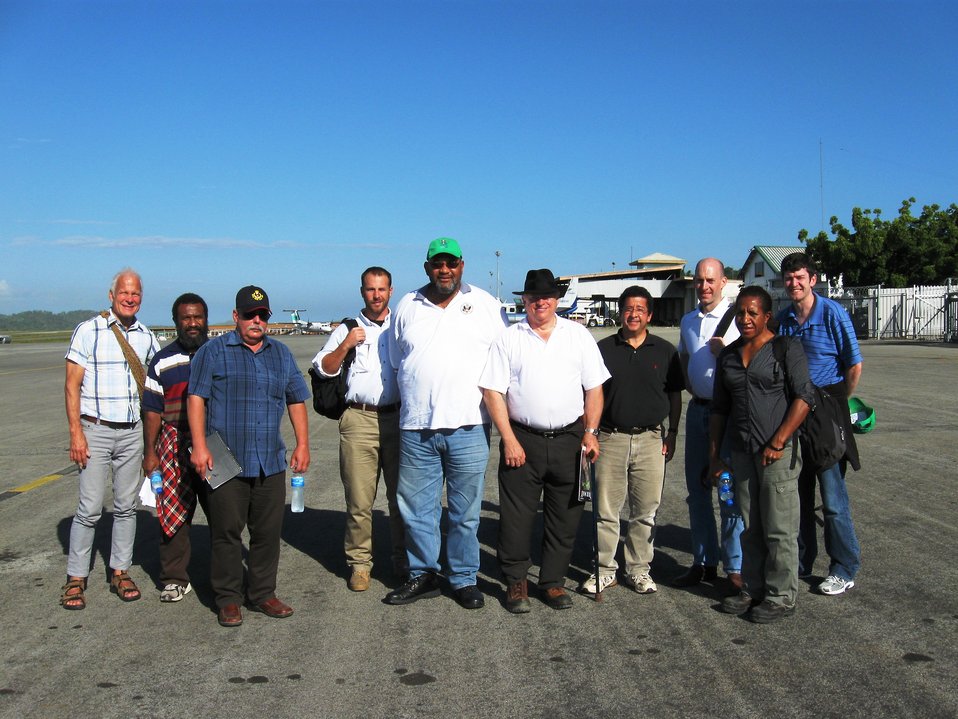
Coordinator for International Energy Affairs Goldwyn, Ambassador Taylor, and Team Members Return to Port Moresby

U.S. Secretary of State Hillary Rodham Clinton’s Coordinator for International Energy Affairs David Goldwyn, U.S. Ambassador to Papua New Guinea, Solomon Islands and Vanuatu Teddy Taylor, and other team members of the Energy Governance and Capacity Initiative (EGCI) return to Port Moresby after an excursion to Elk Antelope in Papua New Guinea on June 19, 2010.